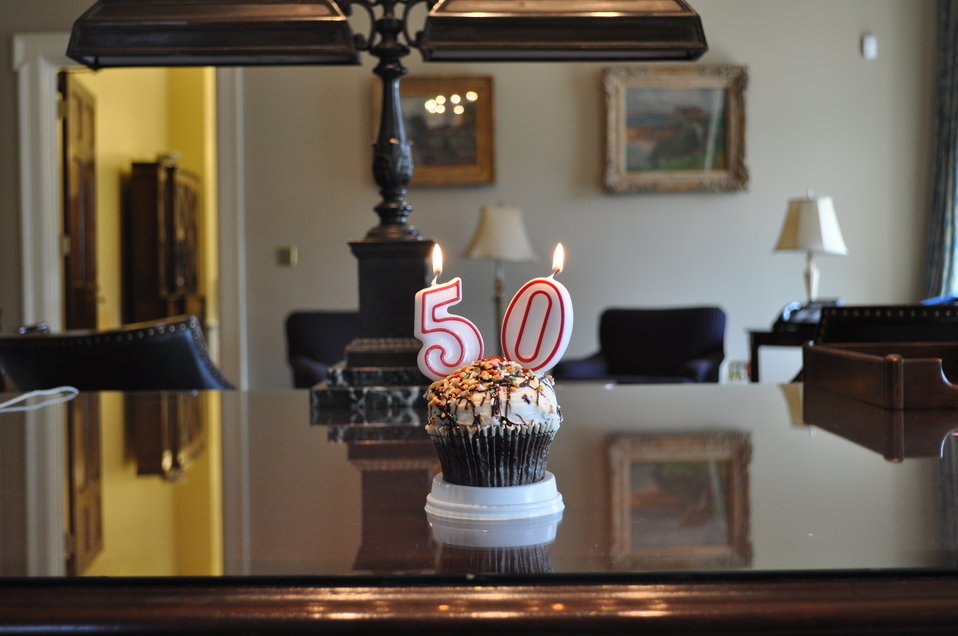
Happy 50th, Secretary Geithner

Happy Birthday to the boss (Geithner, not Springsteen)!